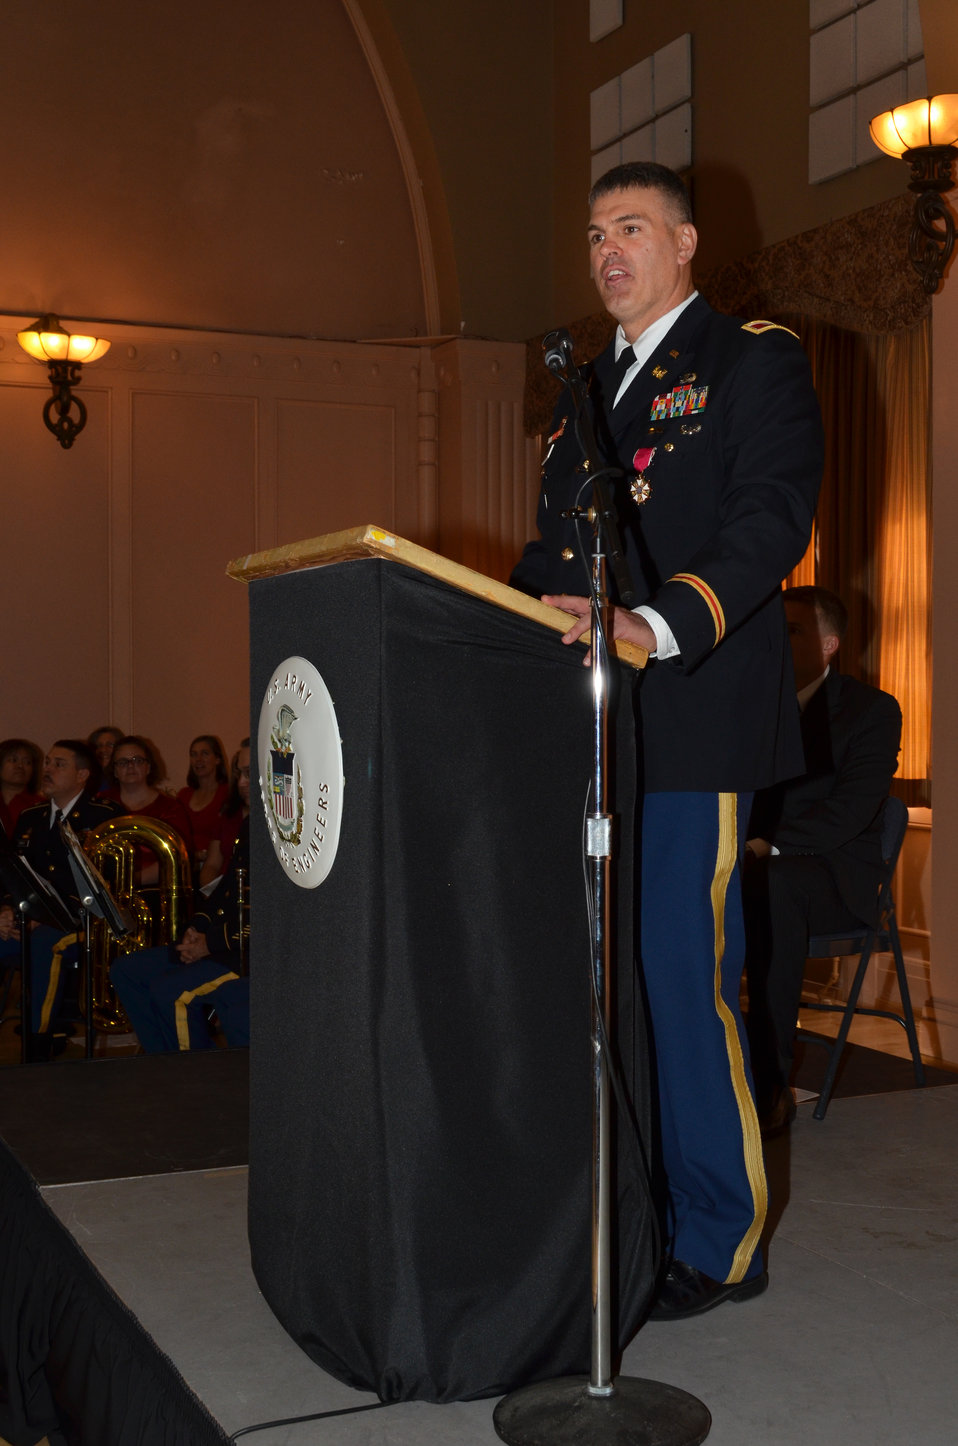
Colonel Leady offers remarks

Colonel William J. Leady, outgoing commander for the U.S. Army Corps of Engineers Sacramento District, offers remarks during the district's 30th change of command ceremony July 10, 2013 at the Masonic Temple in Sacramento, Calif.